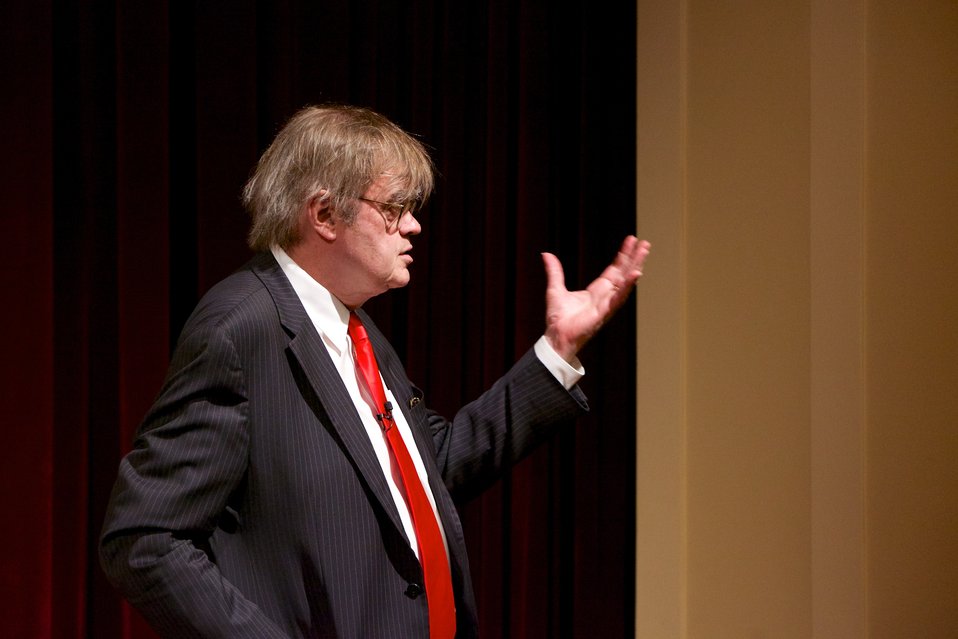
The Keillor Reader